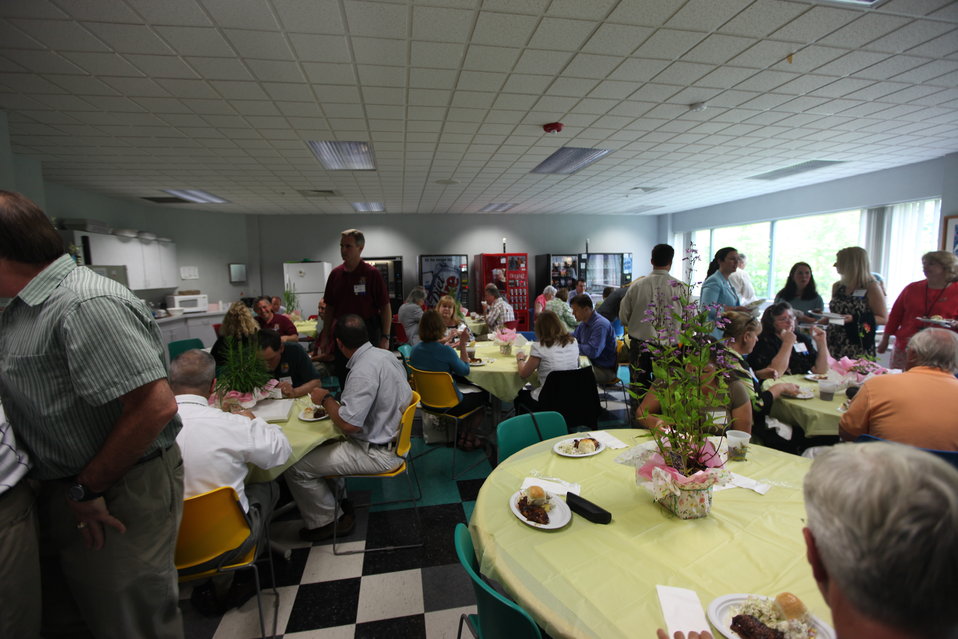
Northeast Region Employee Appreciation Awards

Luncheon